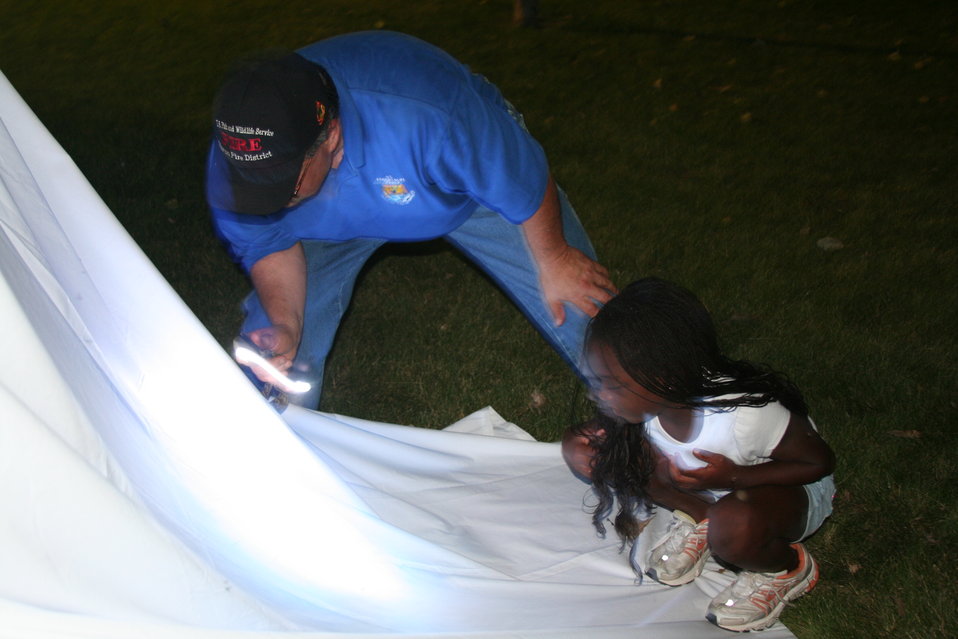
Creatures of the Night 2011

FWS staff showing children different bugs that can be found at night. Bugs show up really well on a white sheet.